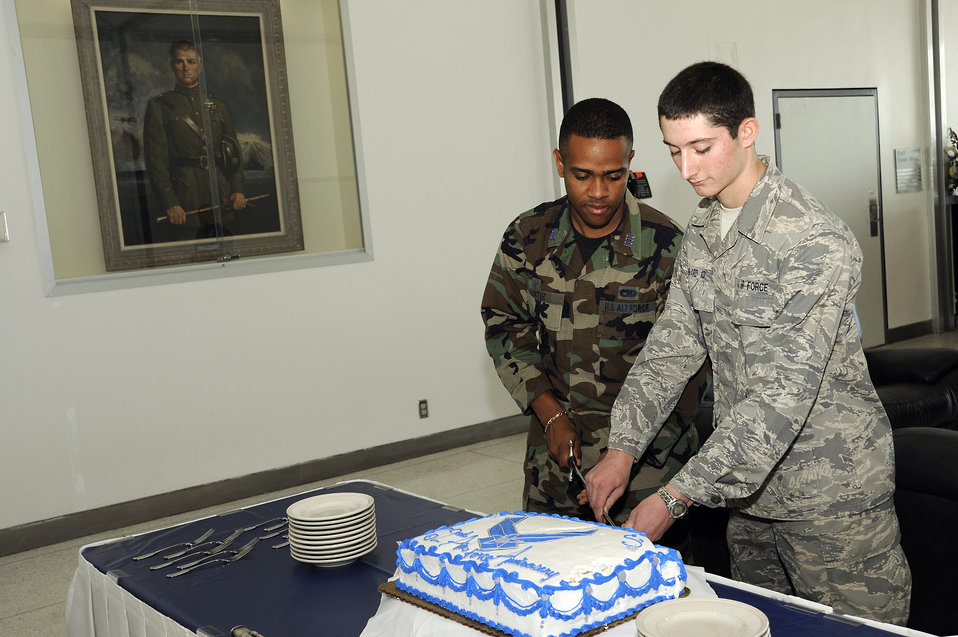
Academy faculty, cadets honor Air Force's 62nd birthday

Cadet 1st Class Christopher Hunter from Cadet Squadron 33 and Cadet 4th Class Timothy Ambard from Cadet Squadron 38 cut a cake during a party for the Air Force's 62nd birthday at the U.S. Air Force Academy in Colorado Springs, Colo., Sept. 18, 2009. Cadet Hunter is the oldest attending Academy cadet, and Cadet Ambard is the youngest.